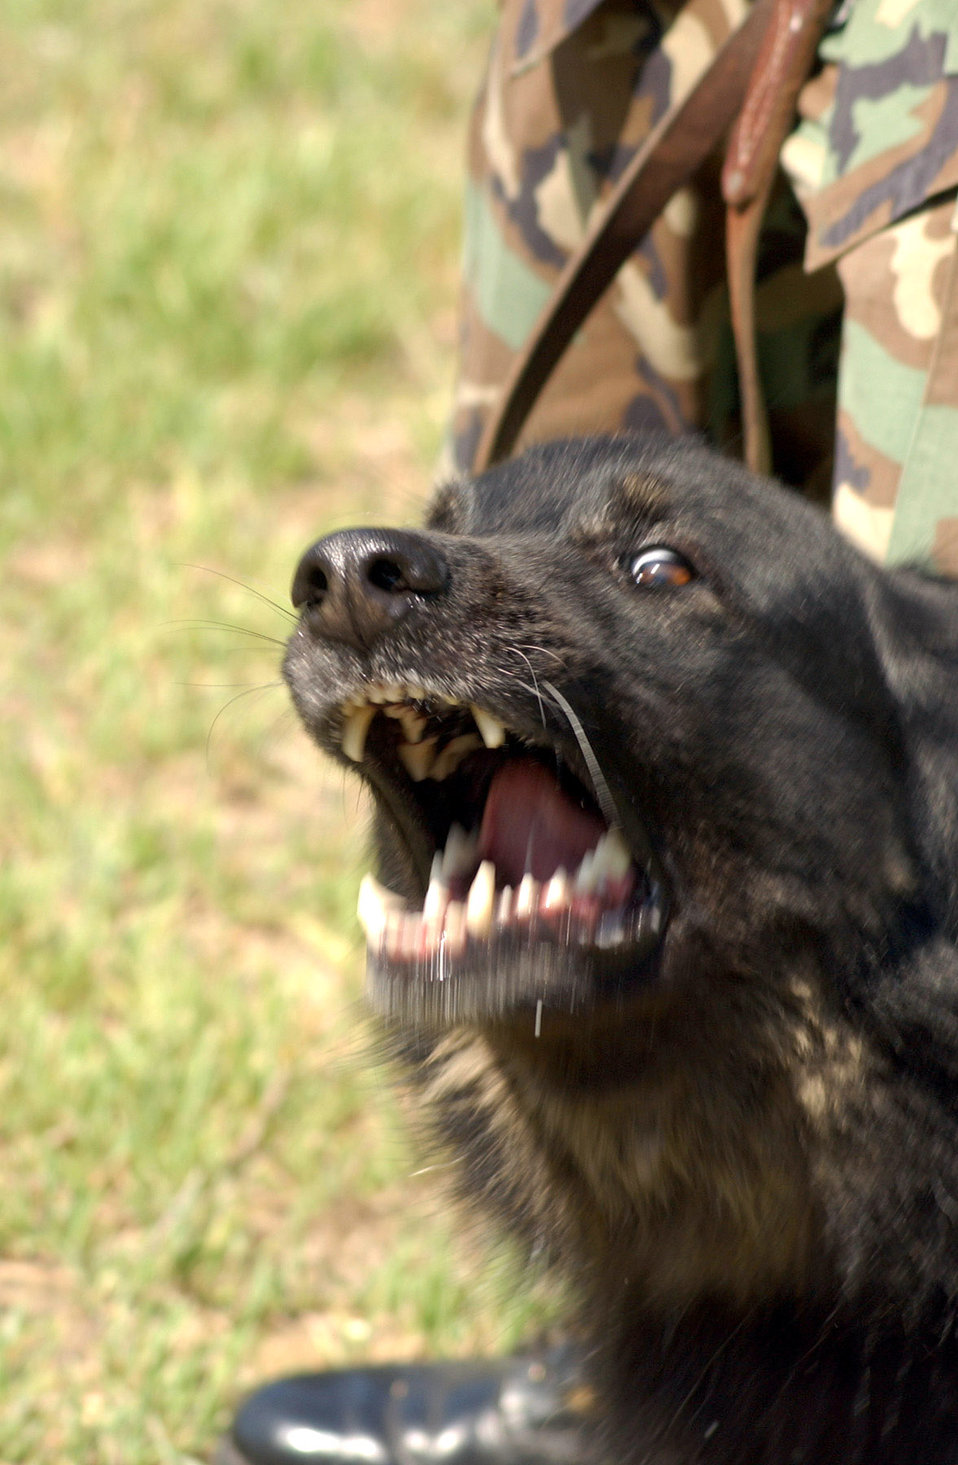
Military working dog Frisko

Frisko is an explosive ordnance dog at Seymour Johnson Air Force Base, N.C. He is trained to detect explosives and bite to hold a suspect for his security forces handler. He has deployed six times, aided in insurgent captures and detected improvised explosive devices.